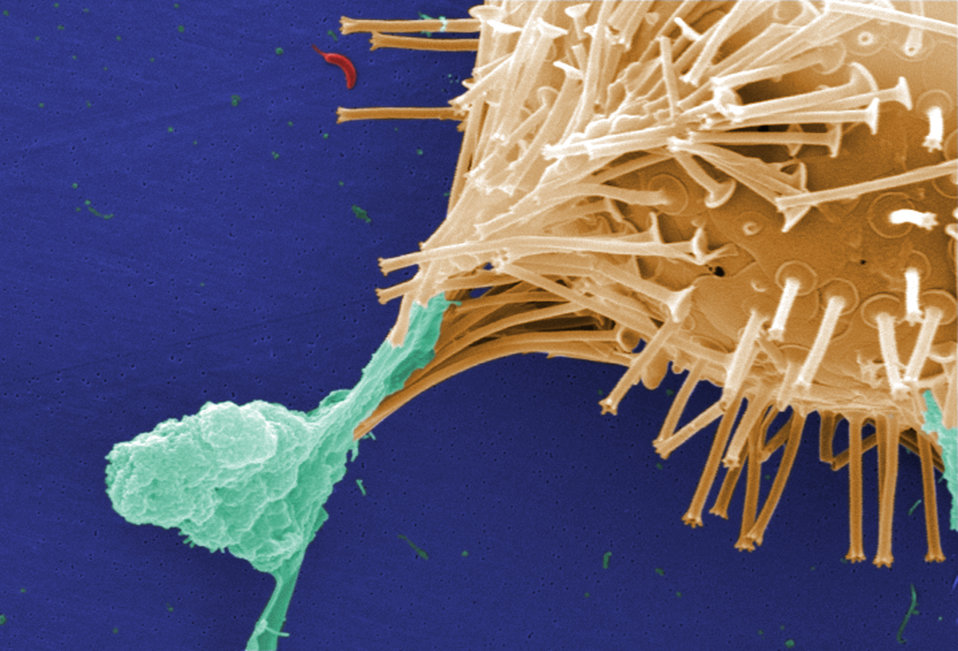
This digitally-colorized scanning electron micrograph (SEM) of an untreated water specimen extracted from a wild stream mainly used to control flooding during inclement weather, revealed the presence of unidentified organisms, which included bacteria, protozoa, and algae. In this particular view, a microorganism is featured, the exterior of which is covered by numerous projections imparting an appearance of a sea urchin. This microscopic 'pin cushion' was teathered to its surroundings by a biofilm within which many bacteria, and amoeboid protozoa could be seen enmeshed as well. See PHIL 11682 and 11684, for additional views of this creature under successively greater magnifications.